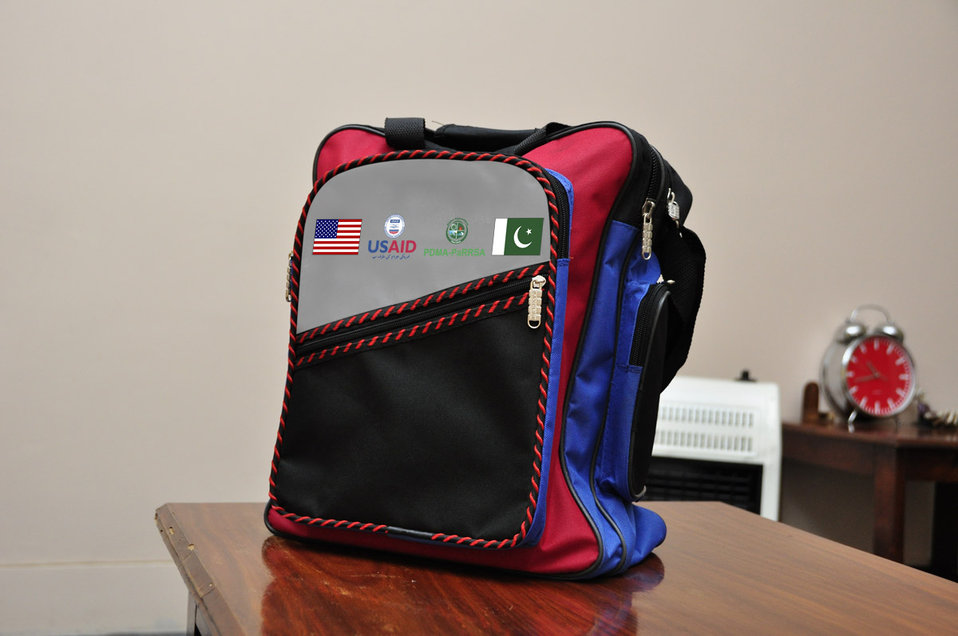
Buner School

Peshawar, March 14, 2012 - The Provincial Reconstruction, Rehabilitation and Settlement Authority (PaRRSA) handed over today to the KP Education Department the first of the 122 U.S. Government-sponsored schools at Torwarsak, Buner.